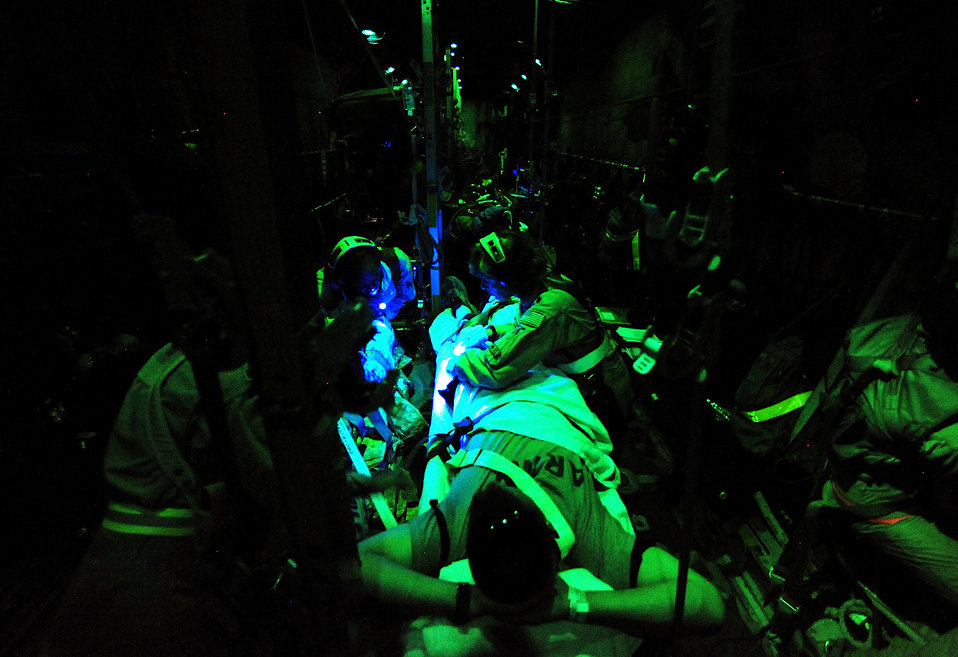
Medical crew

Maj. Marty Maddox observes patients' bandages during an aeromedical mission aboard a C-130 Hercules aircraft July 17, 2010, from Tikrit, Iraq, to Joint Base Balad, Iraq. Major Maddox is a flight nurse assigned to the 362nd Expeditionary Aeromedical Evacuation Flight.